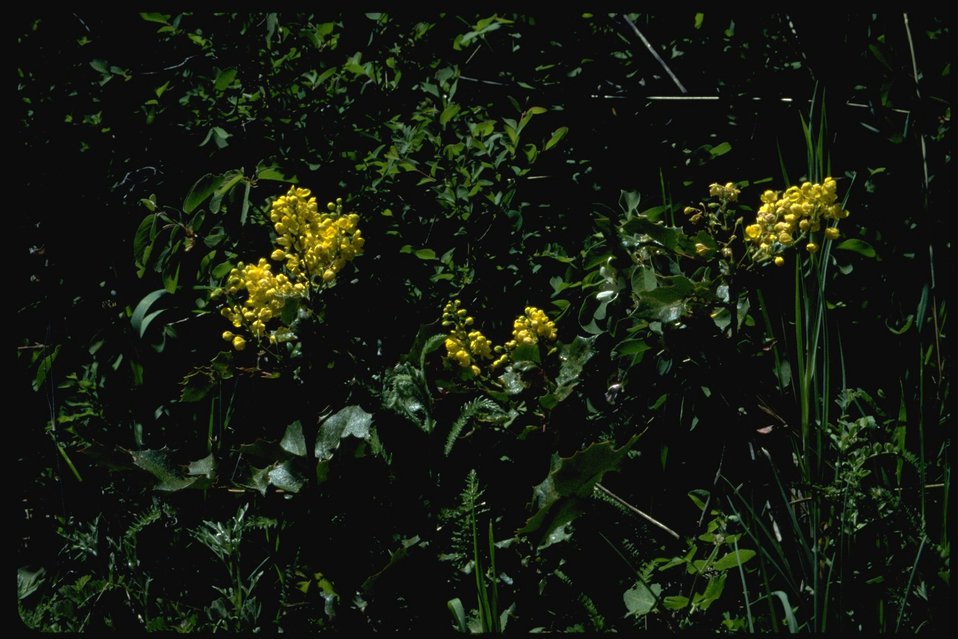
Medium shot of Oregon Grape bloom.